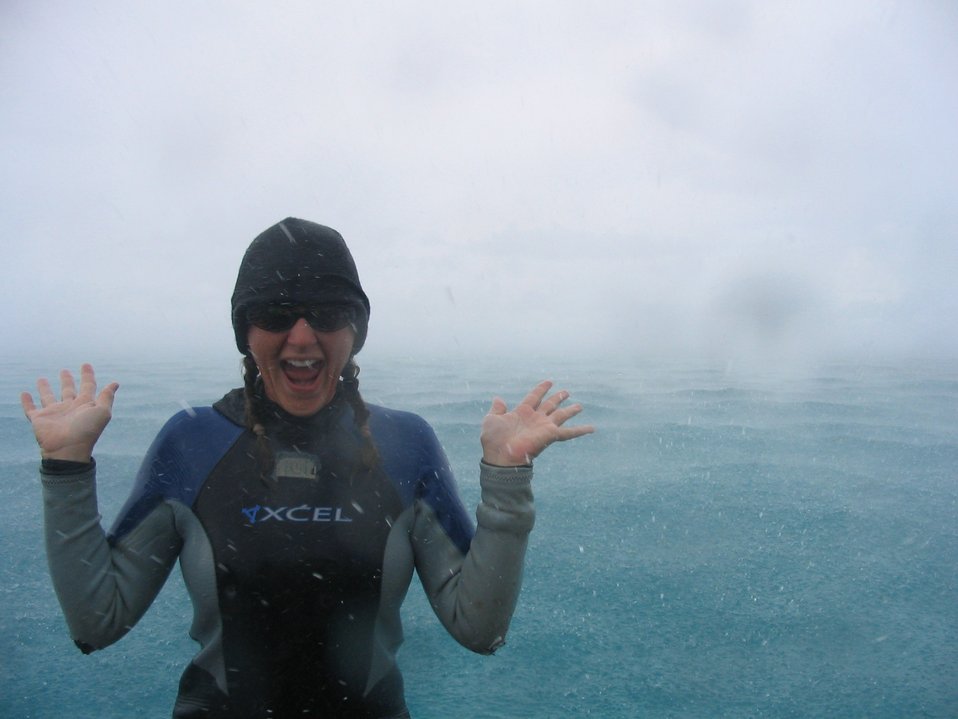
A rainy squally day stops work early.